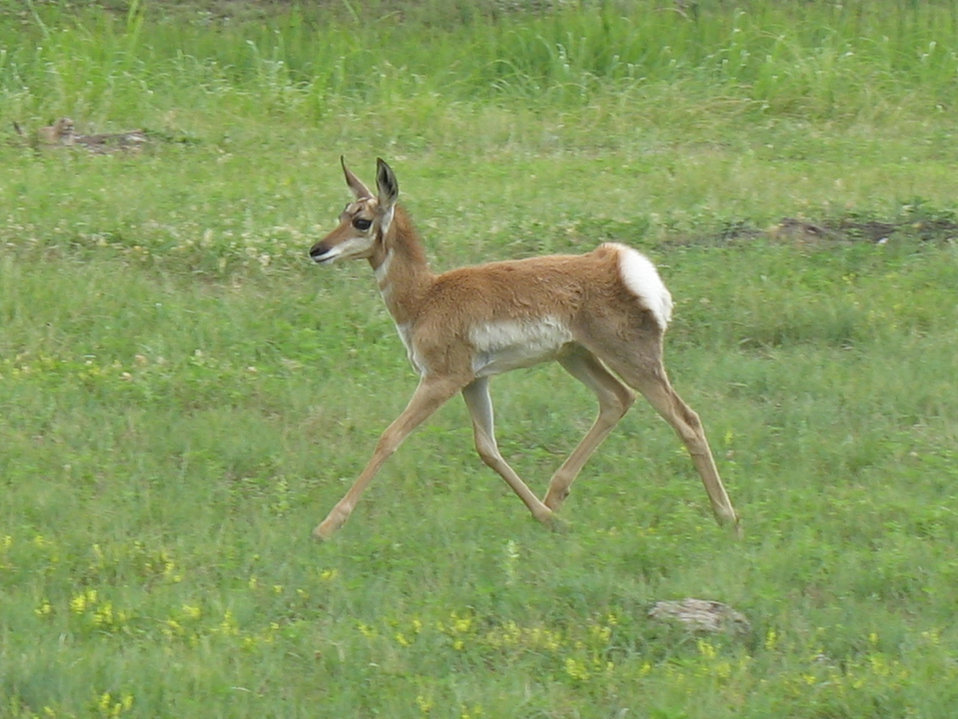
Pronghorn fawn, Wind Cave National Park, South Dakota.

Credit: Pedro 'Pete' Ramirez, Jr. / USFWS